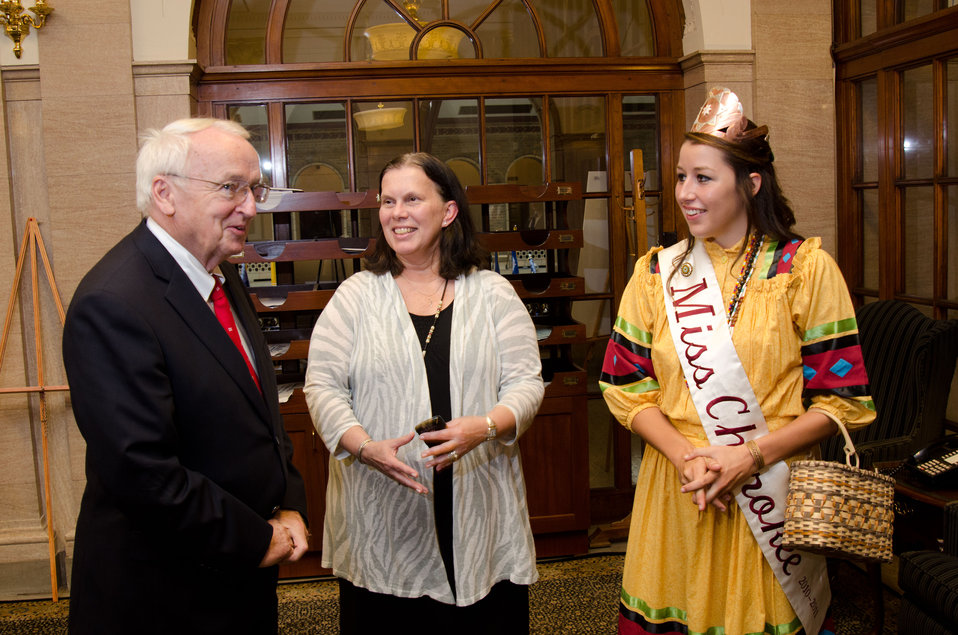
Miss Cherokee 2010-2011 Brooke Hudson (right met with U.S. Department of Agriculture Secretary Under Secretary for Food, Nutrition and Consumer Services Kevin Concannon (left), and Senior Advisor to Agriculture Secretary with the USDA Office of Tribal Relations Janie Hipp in Washington, DC, on Tuesday, August 9, 2011.